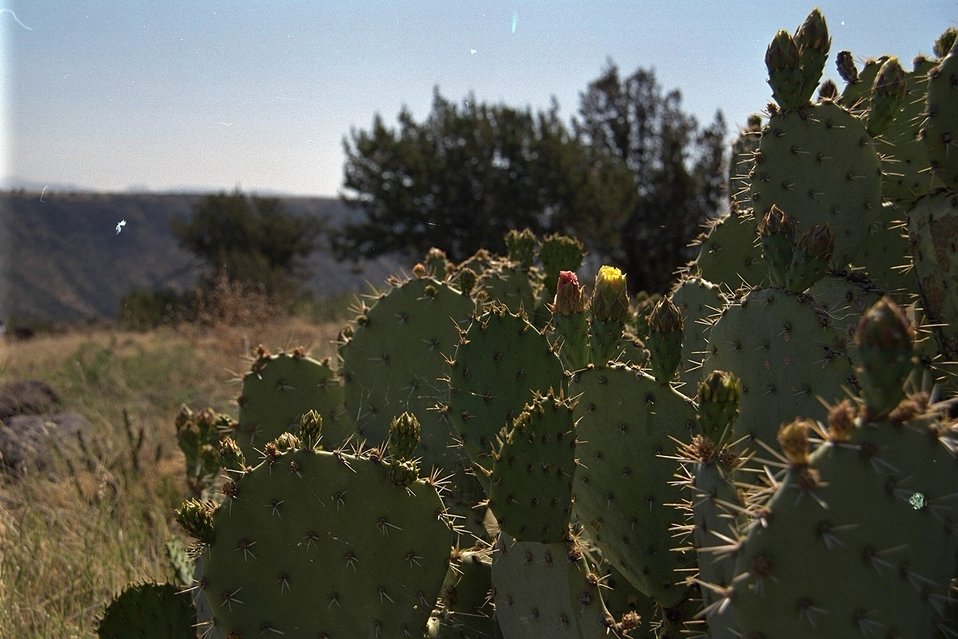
Prickly Pear cacti in sharp focus in foreground with Agua Fria National Monument landscape out of focud in the background.